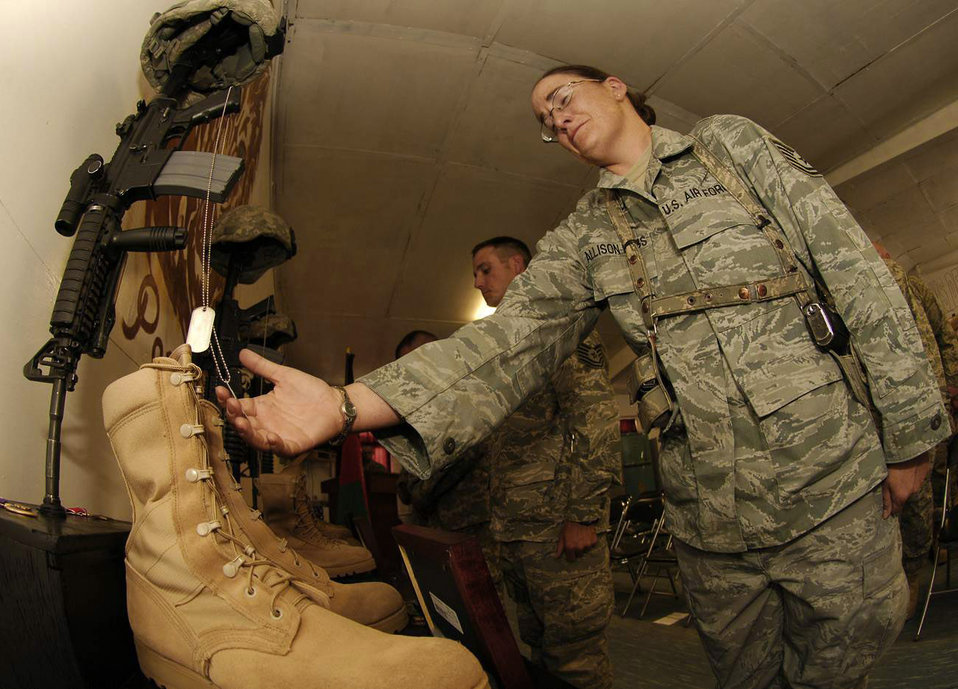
Panjshir reconstruction team bids farewell to fallen comrades

Tech. Sgt. Dawn Allison-Hess grieves for four of her fellow coworkers during a May 31 memorial at Forward Operating Base Lion, Afghanistan. Lt. Col. Mark Stratton, the provincial reconstruction team's commander, Army Master Sgt. Blue Rowe, a civil affairs NCO, Senior Airman Ashton Goodman, the vehicle operator, and Abdul Samad, the unit's legal adviser, were killed when their convoy vehicle was struck by a suicide car bomber May 26.